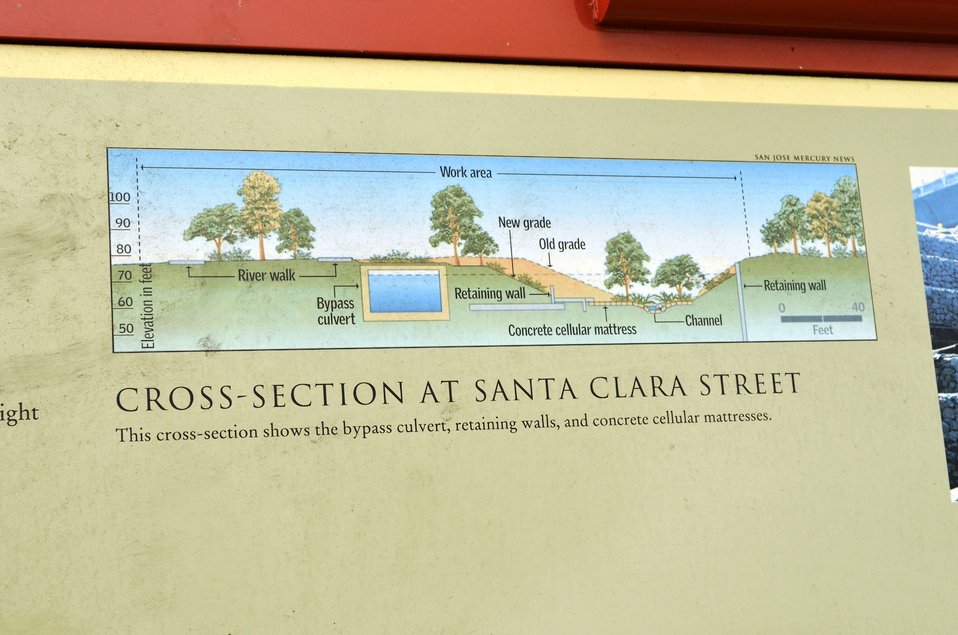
A sign posted along the Guadalupe River Trail, shown Oct. 5, 2011, explains how flood risk reduction features finished around 2004 as part of the U.S. Army Corps of Engineers Sacramento District’s Guadalupe River Project fit in with the natural environment in San Jose, Calif. The decades-long project is scheduled for completion next year.